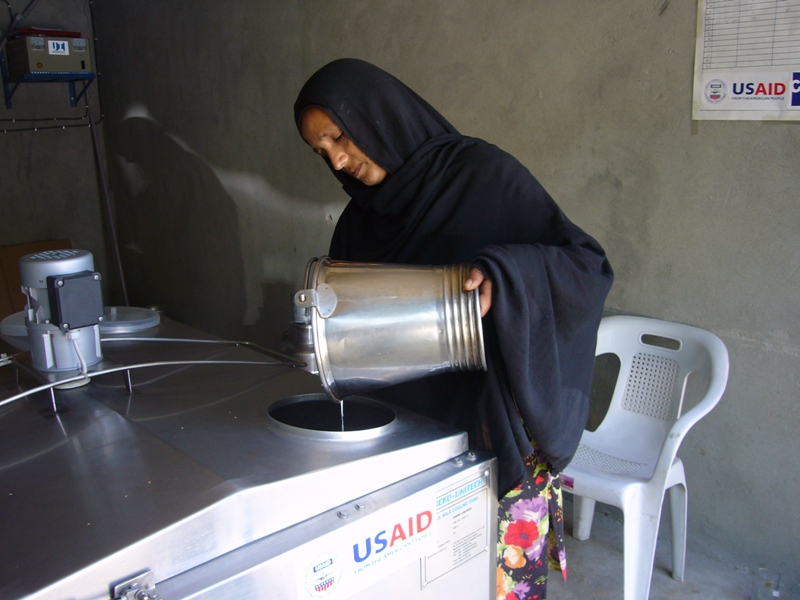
EG Dairy new dairy equipment